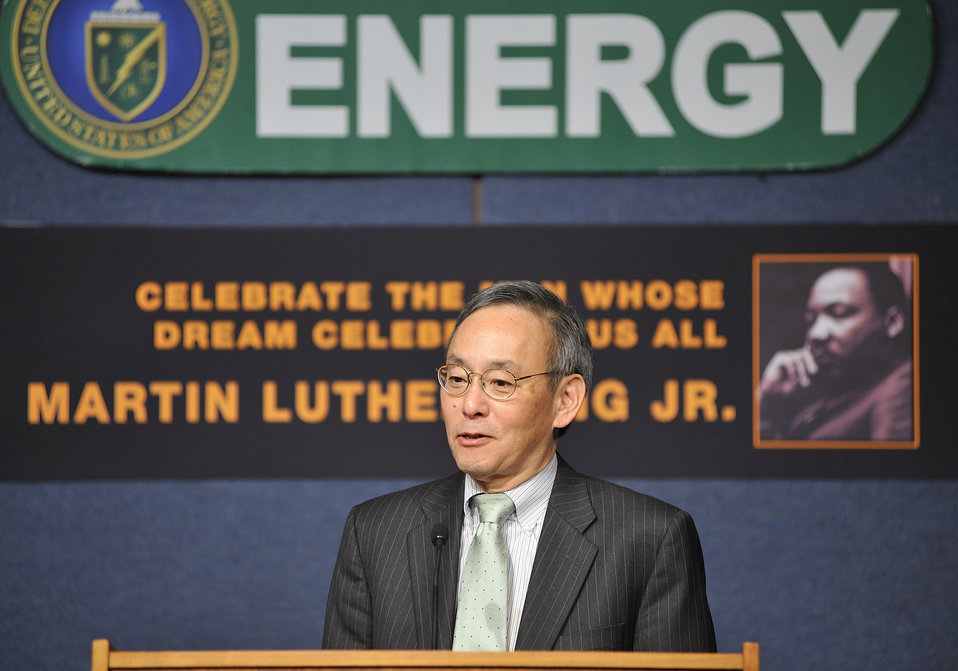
Martin Luther King Jr. Day Celebration at DOE headquarters.